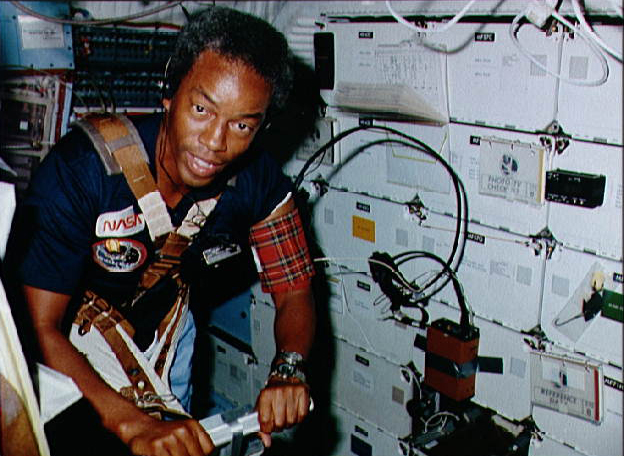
Colonel Guion S. Bluford Jr.

1970's -- Guion S. Bluford Jr. has the distinction of being the first African-American to be chosen as an NASA astronaut.